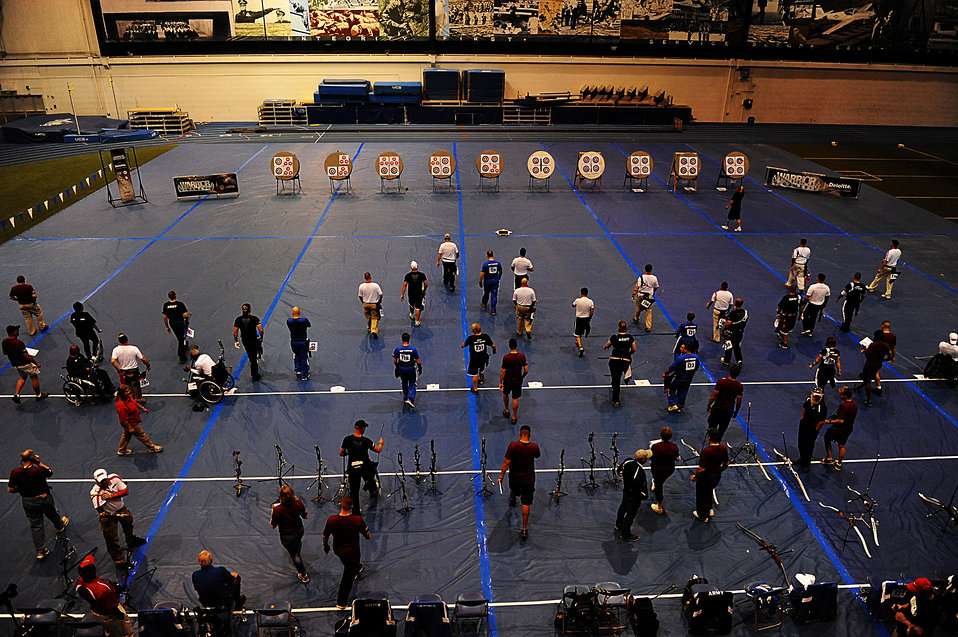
Warrior Games

Athletes, coaches and officials walk toward targets during the archery competition of Warrior Games 2012 at the U.S. Air Force Academy in Colorado Springs, Colo., May 2, 2012.